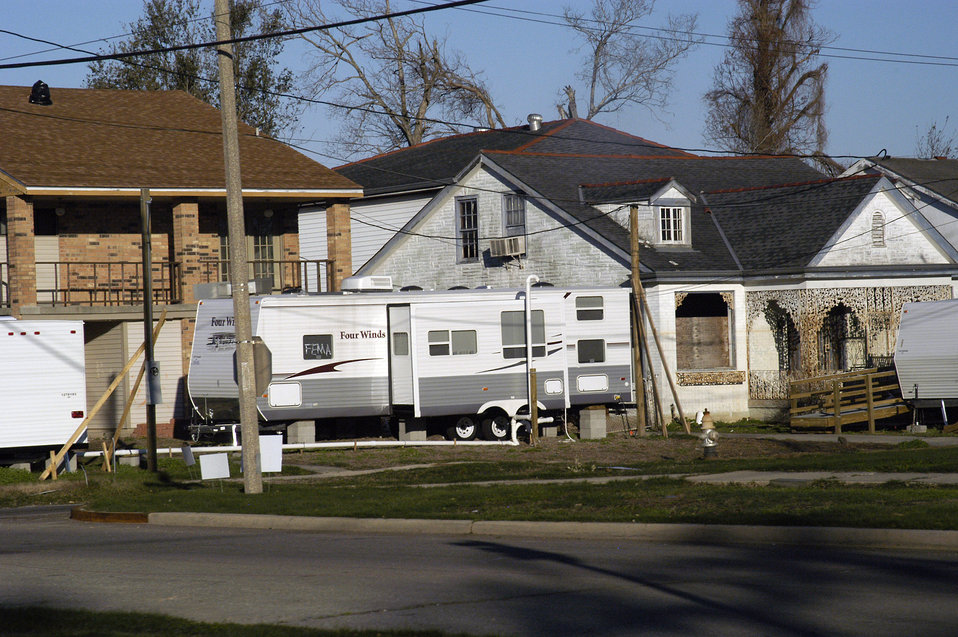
Hurricane Katrina left thousands of people homeless in the New Orleans, LA. Trailers were given to homeowners in New Orleans, LA, as temporary shelters were provided by the Federal Emergency Management Agency (FEMA). Hurricane Katrina was the 6th strongest hurricane in U.S. history and the 5th deadliest. Katrina made landfall on Monday morning, August 29, 2005 as a Category 3 hurricane with sustained winds of 125 mph with over a 20-foot storm surge. Katrina caused catastrophic damage over 90 thousand square miles across Louisiana with an estimated $75 billion dollars in damage. The total economic impact to the Gulf Coast was estimated at over $150 billion. 80% of New Orleans, LA, was underwater with some areas more than 20 feet deep. Less than a month later southern Louisiana was struck by a second Category 3 hurricane Rita inflicting more damage in the southwestern areas of Louisiana adding an addition $12 billion worth of damage to the already beleaguered state. The U.S. Army Corps of Engineers (USACE) under the auspices of FEMA was the lead service in providing assistance to the citizens of Louisiana. The U.S. Department of Agriculture (USDA) supplied emergency food aid, emergency loan assistance to farmers and home owners, and USDA personnel from around the nation volunteered their time and muscle to aid in the recovery operations.